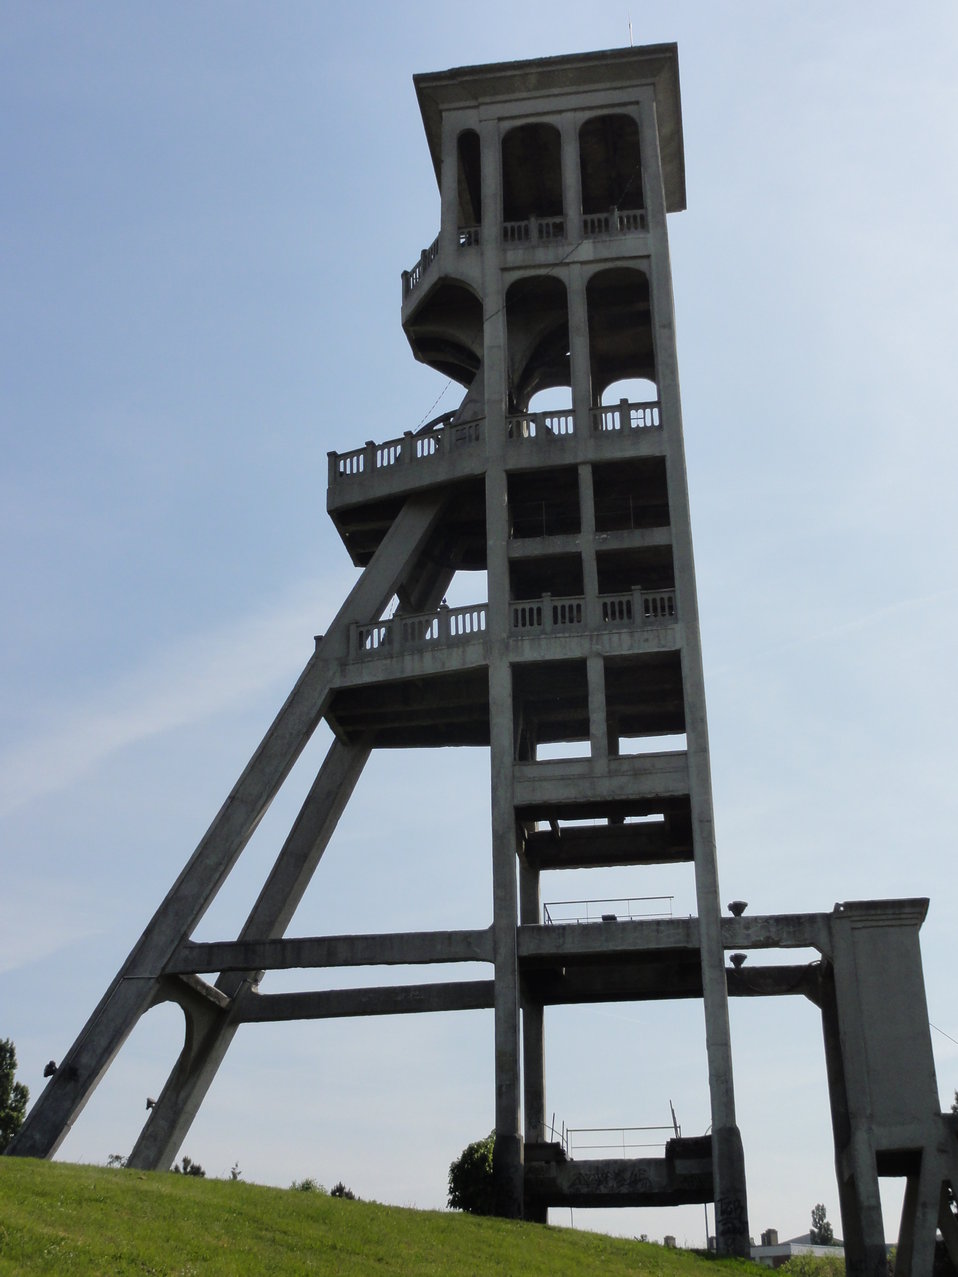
Fran√ßais†: La Fosse Dutemple de la Compagnie des mines d'Anzin √©tait un charbonnage constitu√© de deux puits situ√© √† Valenciennes, Nord, Nord-Pas-de-Calais, France.